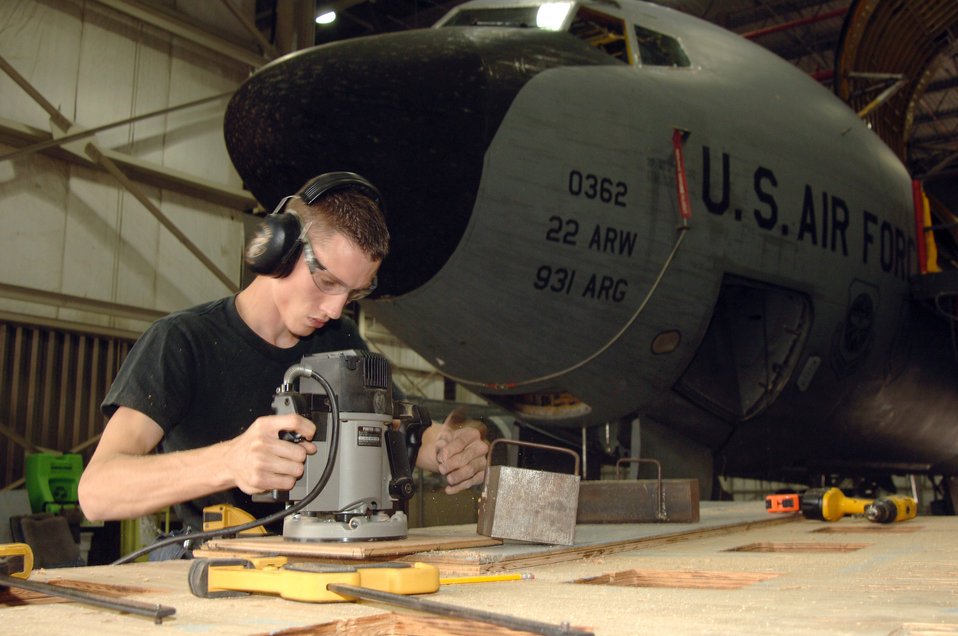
McConnell completes first refurbishment project

MCCONNELL AIR FORCE BASE, Kan. -- Senior Airman Kory Meda with the 22nd Maintenance Squadron routes replacements floorboards during a KC-135 refurbishing project here.